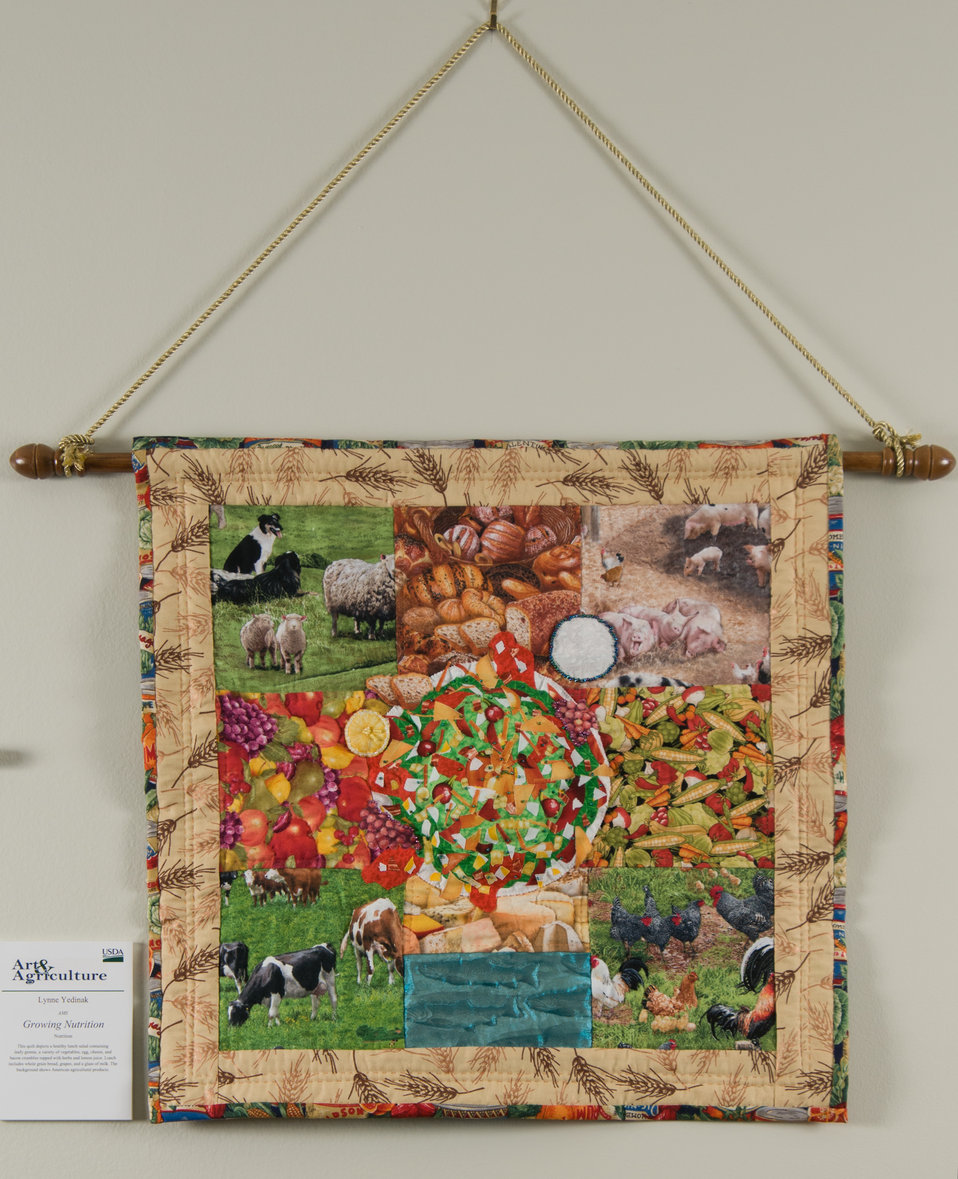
Online Viewer's Choice entries of the 2013 Art & Agriculture, Tuesday, July 9, 2013, in the South Building, Washington, D.C. Themes were expressed by employees from across the department and the contest was open to full-time and part-time USDA employees. Winning artwork will be displayed till the end of the year. U.S. Artistic expression is a creative outlet that is vital for an individual to grow and develop.